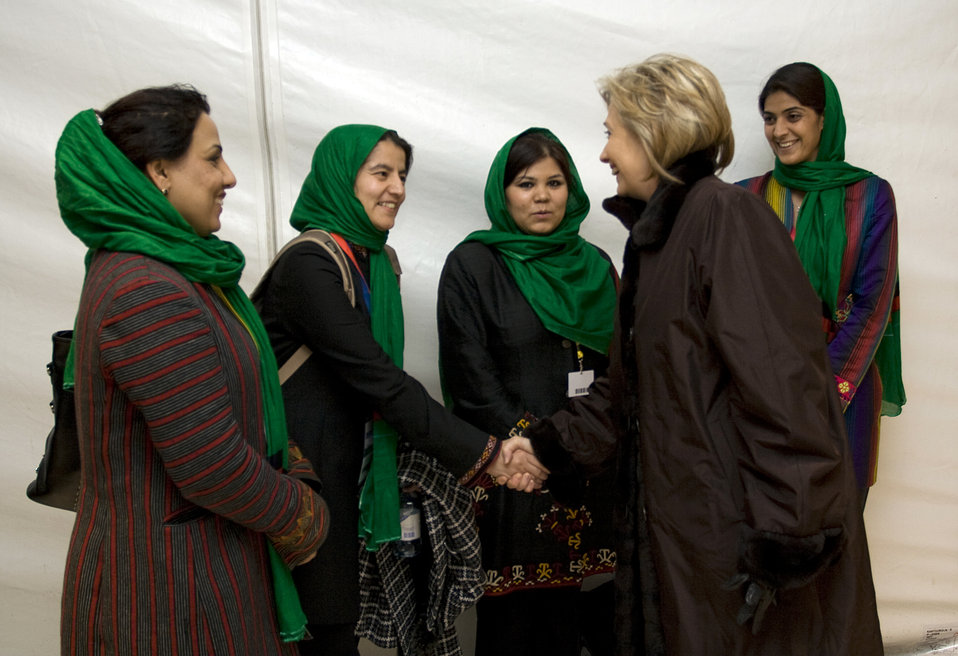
London Conference on Afghanistan

U.S. Secretary of State Hillary Rodham Clinton speaks with women from Afghanistan at London Conference on Afghanistan, January 28, 2010.